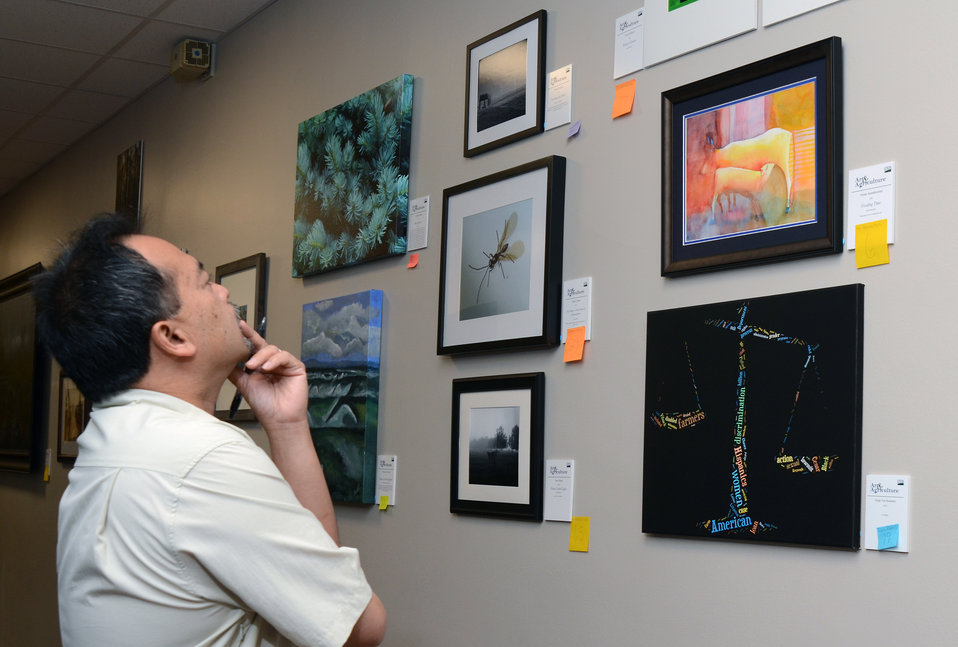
Johnny Bivera, Executive Director and Producer at Visual Media One judges the photography portion of the Art and Agriculture competition in the South Building at the U.S. Department of Agriculture (USDA), Washington D.C. Thursday, May 10, 2012.